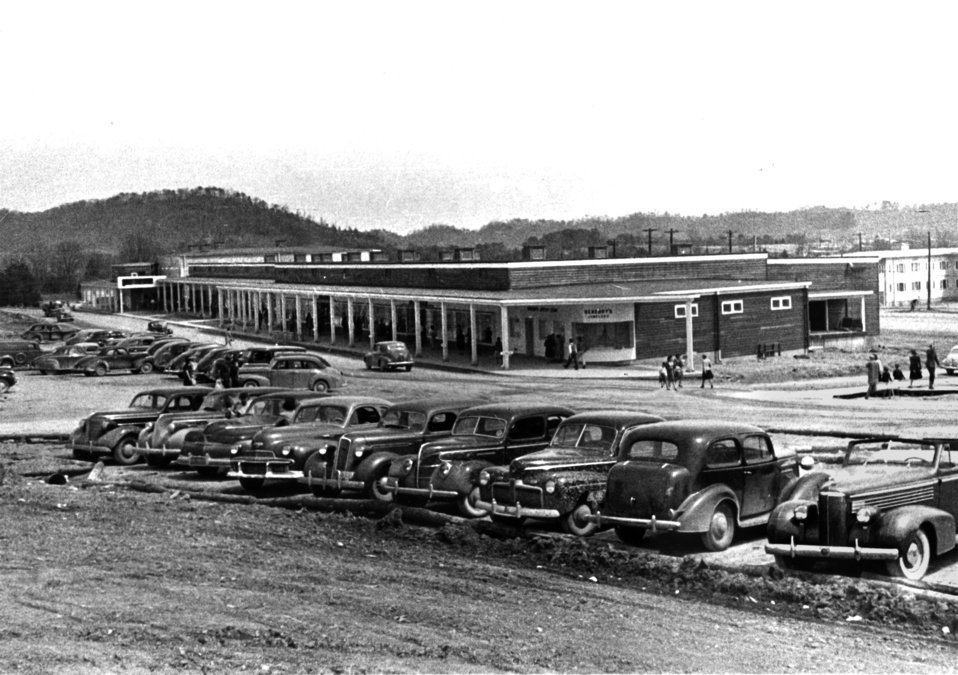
Ridge theater-Jackson Square Oak Ridge

225-4 Ed Westcott 1944
Oak Ridge Tennessee